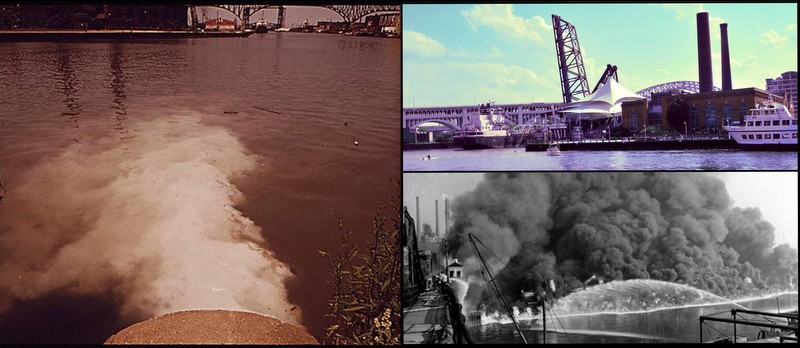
Then and Now, Cuyahoga River, Ohio

Then: 'City Pump Station Discharges Sewage into the Cuyahoga River,' July, 1973 photo by Frank J. Aleksandrowicz for Documerica.

Way Back Then: One of the Cuyahoga River fires, this event in 1952. (Photo by James Thomas). Images courtesy of Cleveland Press Collection, Cleveland State University Library.

Now: Cuyahoga River Today. September, 2012 by Pete Cassell for State of the Environment

Have some change to share near you?